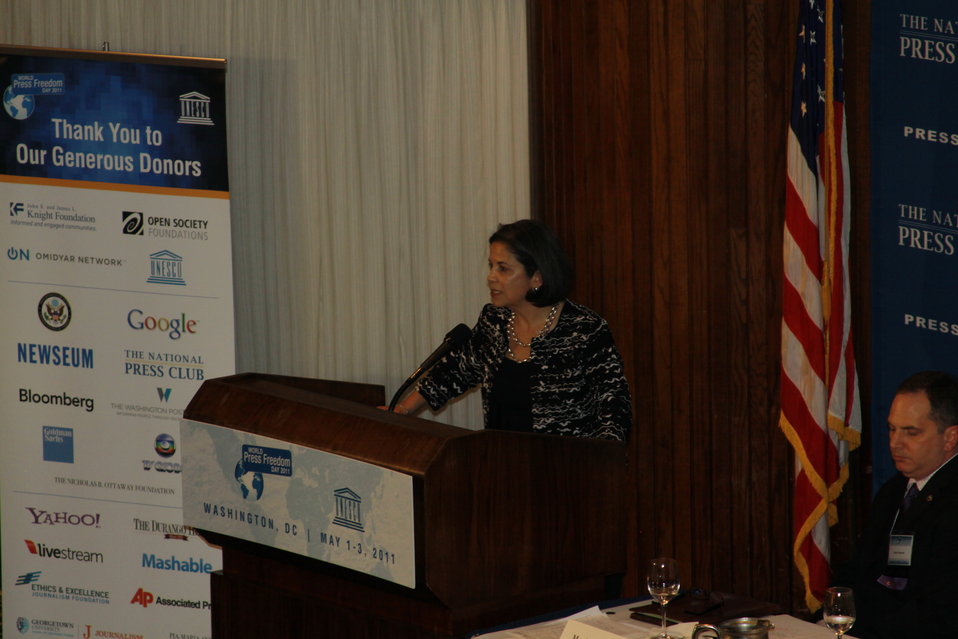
Under Secretary Otero Addresses the Closing Ceremony

Under Secretary of State for Democracy and Global Affairs Maria Otero addresses the closing ceremony of the 2011 World Press Freedom Day Global Conference, at the National Press Club in Washington, D.C., on May 3, 2011.